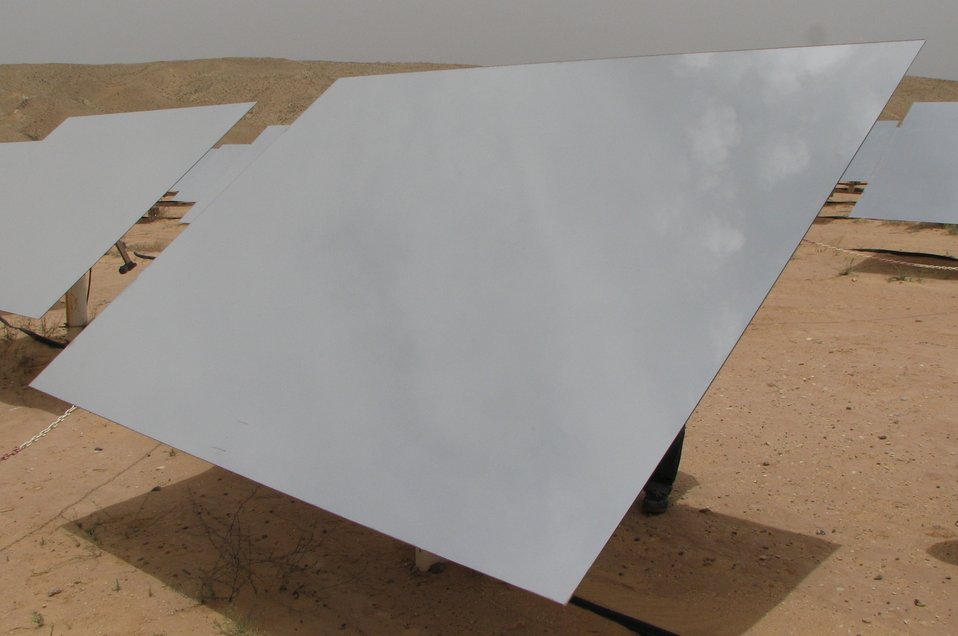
עברית: הליוסטטים באתר SEDC בפארק התעשיה רותם